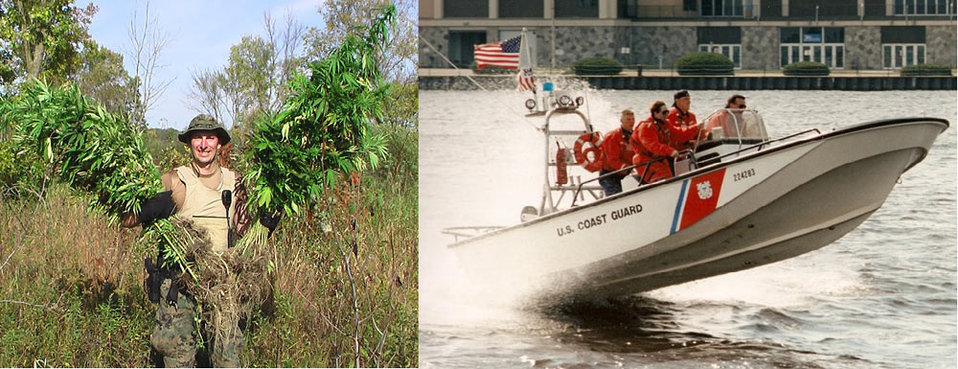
Jeff Lucas-HQ

Coast Guard veteran Jeff Lucas is now a Federal Wildlife Officer and Law Enforcement Specialist in the Branch of Operations in the National Wildlife Refuge System.